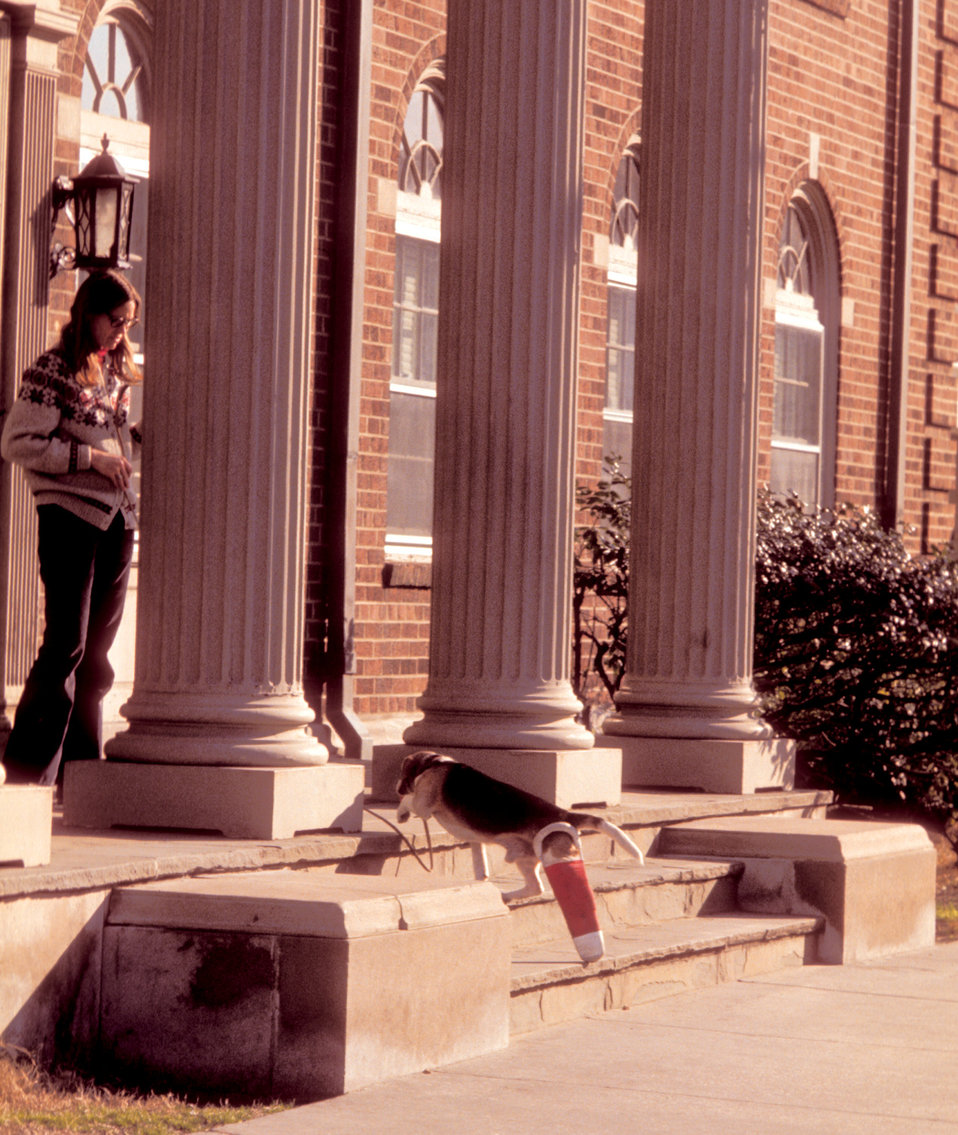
Here, as in PHIL 9058, this functionally-impaired beagle was confronted by a series of steps, which it was climbing in this 1978 image. With a broken right rear leg that had been set in a cast, this photograph illustrated how diverse a user population need be taken into account when designing public walkways. Human beings of all types and in all states of mobility, as well as animals, must be considered in order for a functional walkway to be considered "universal" in its usability and functionality. Note the steeper steps in PHIL 9058, which the mobility-challenged beagle found daunting, and therefore, unable to conquer.